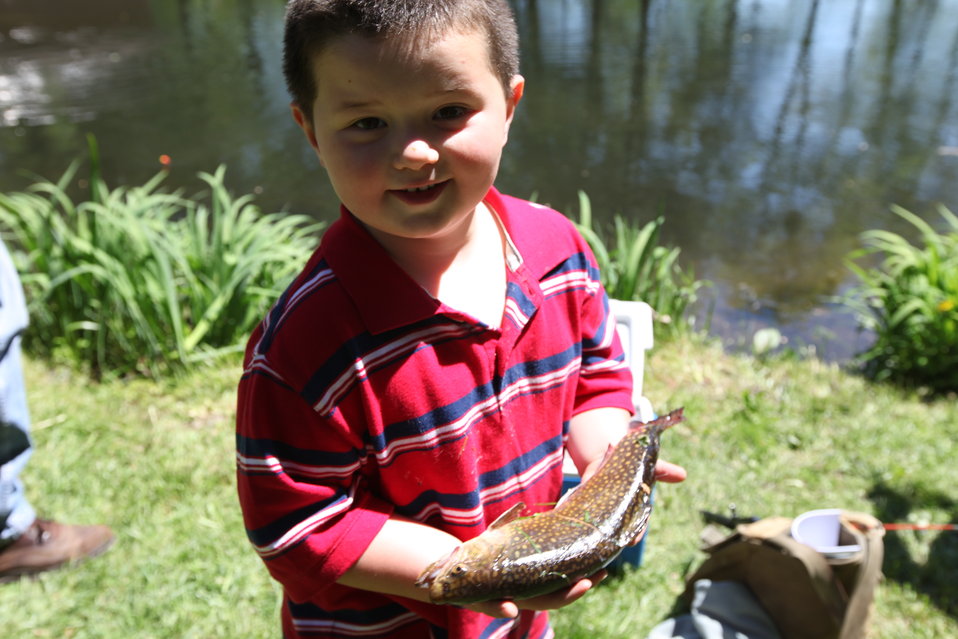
Youth Fishing Derby 2012

Megan Nagel/USFWS